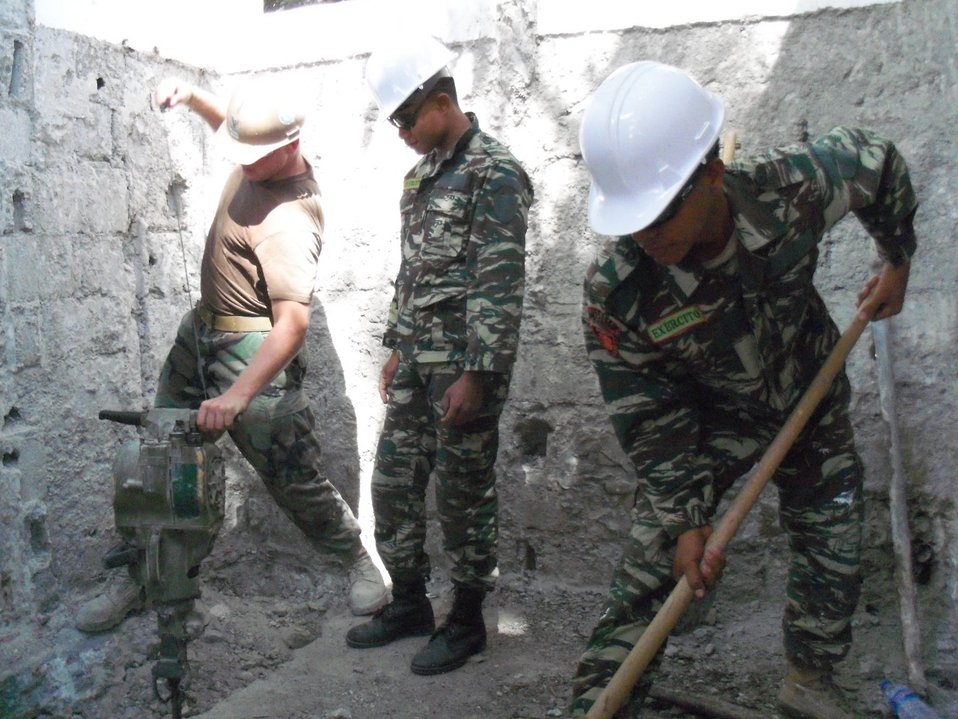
Utilitiesman 2nd Class (SCW) Dines Demonstrates for Timorese Defense Force F-FDTL Workers how To Properly Use a Jack Hammer

Utilitiesman 2nd Class (SCW) Erik Dines, assigned to Naval Mobile Construction Battalion ELEVEN (NMCB 11), demonstrates for Timorese Defense Force F-FDTL workers how to properly use a jack hammer at the EP Nu Laran School in Dili, Timor-Leste, on August 6, 2010. The renovation project is part of Pacific Partnership 2010, the fifth in a series of annual U.S. Pacific Fleet humanitarian and civic assistance endeavors aimed at strengthening regional partnerships.